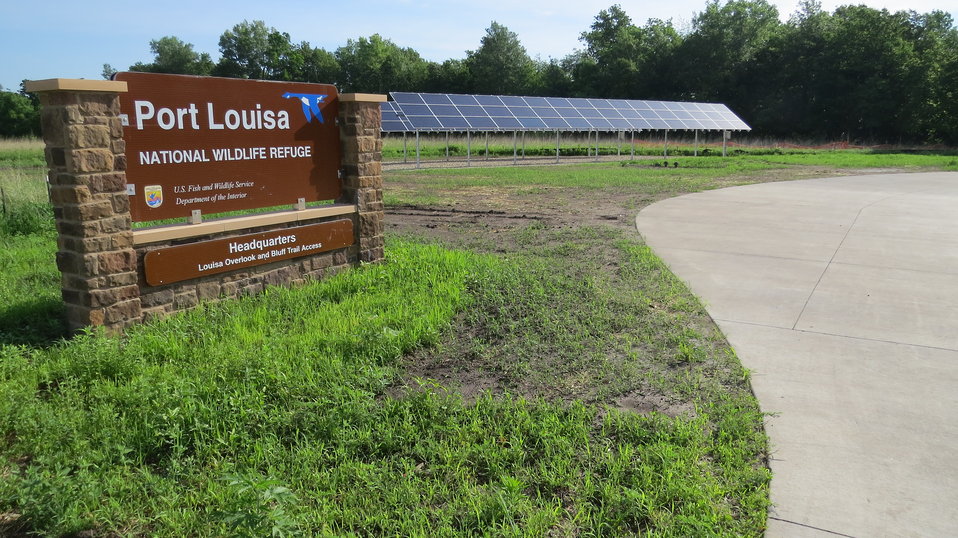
Port Louisa National Wildlife Refuge Headquarters and Visitor Center